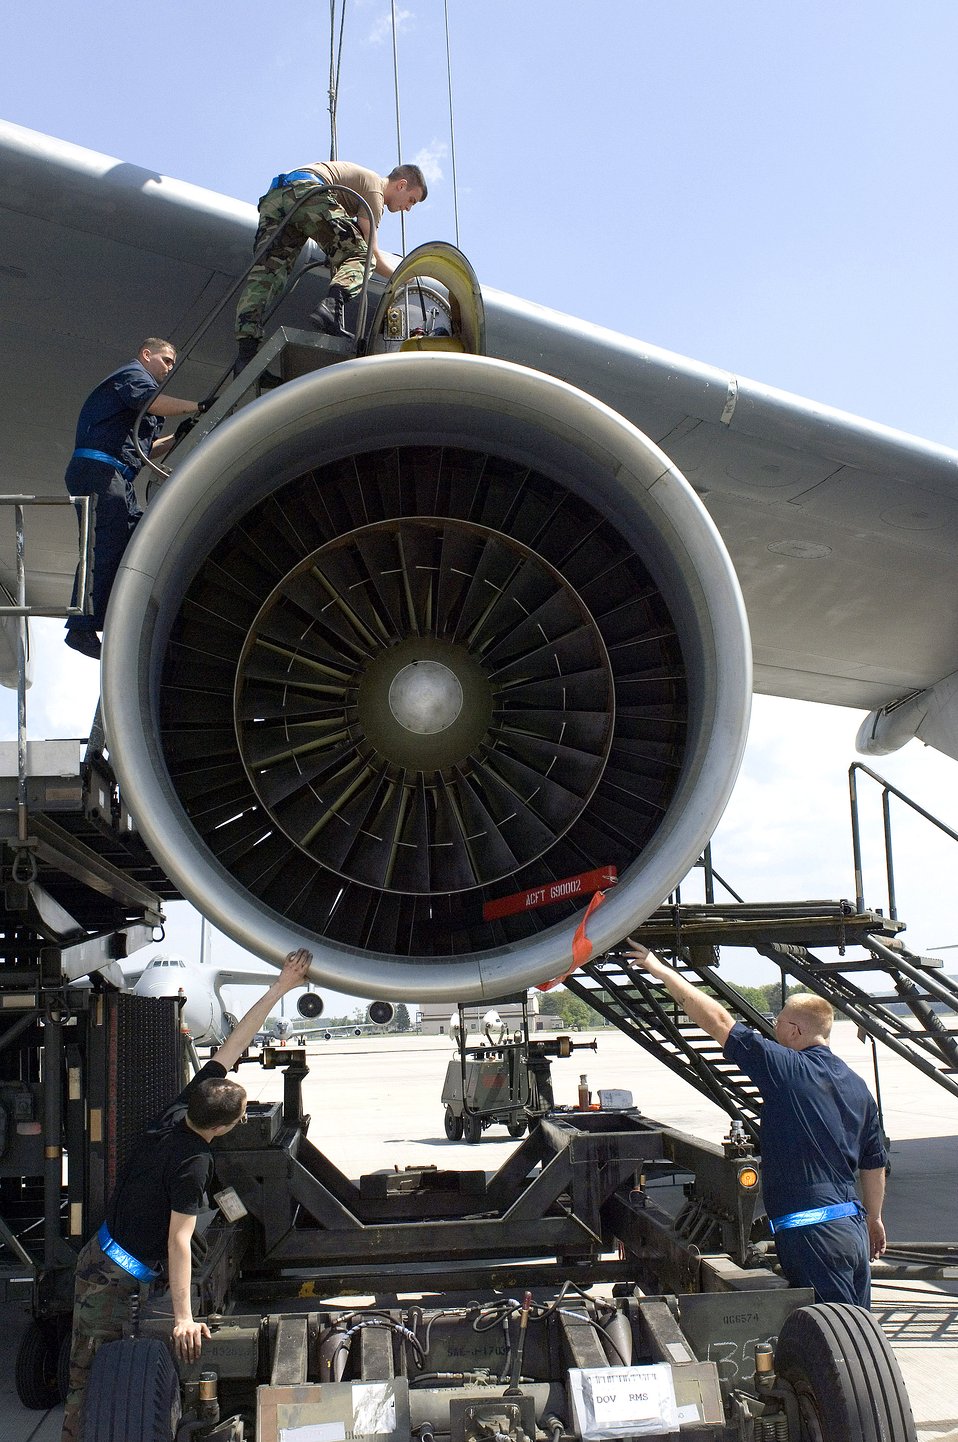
Maintainers keep C-5s flying

Maintainers line up a jet engine in order to mount it on a C-5 Galaxy on May 12, 2006, at Ramstein Air Base, Germany. The Airmen are with the 723rd Air Mobility Squadron.